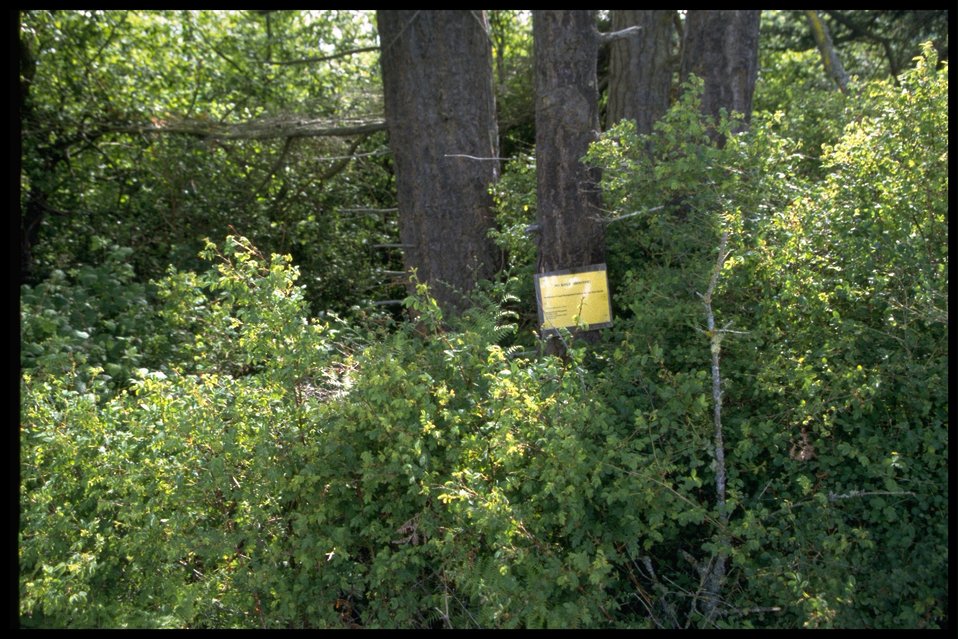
A "No Rifle Shooting" sign near the Chadwick Hill Marsh.